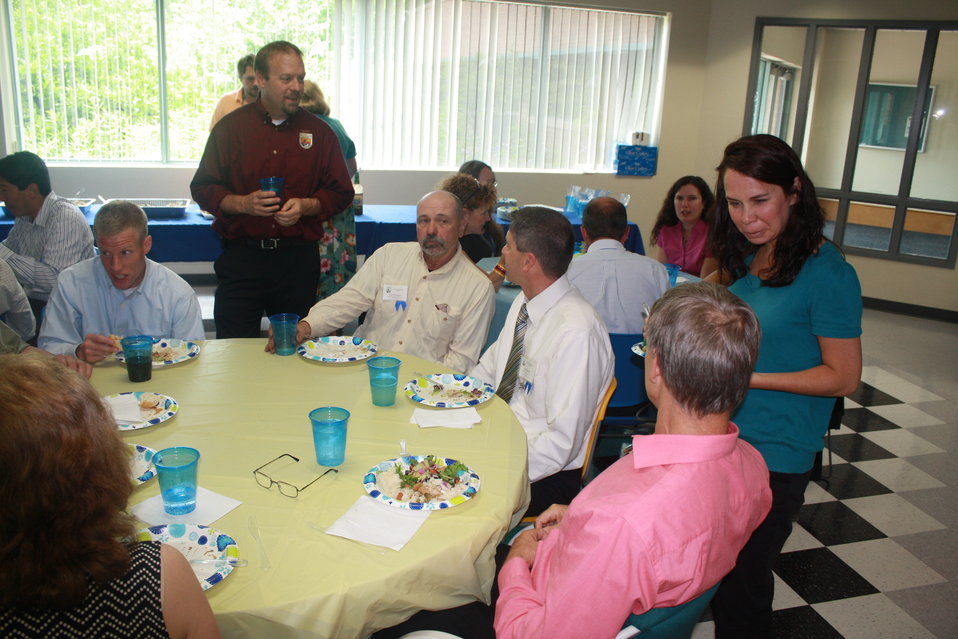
R5 Awards Ceremony